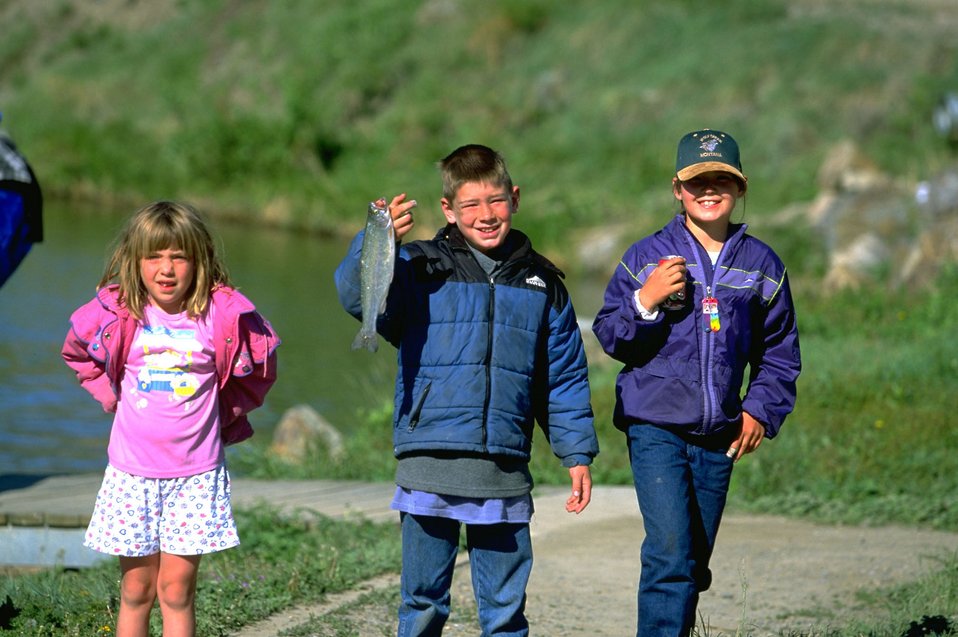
Kids with a fish at Log Gulch Campground